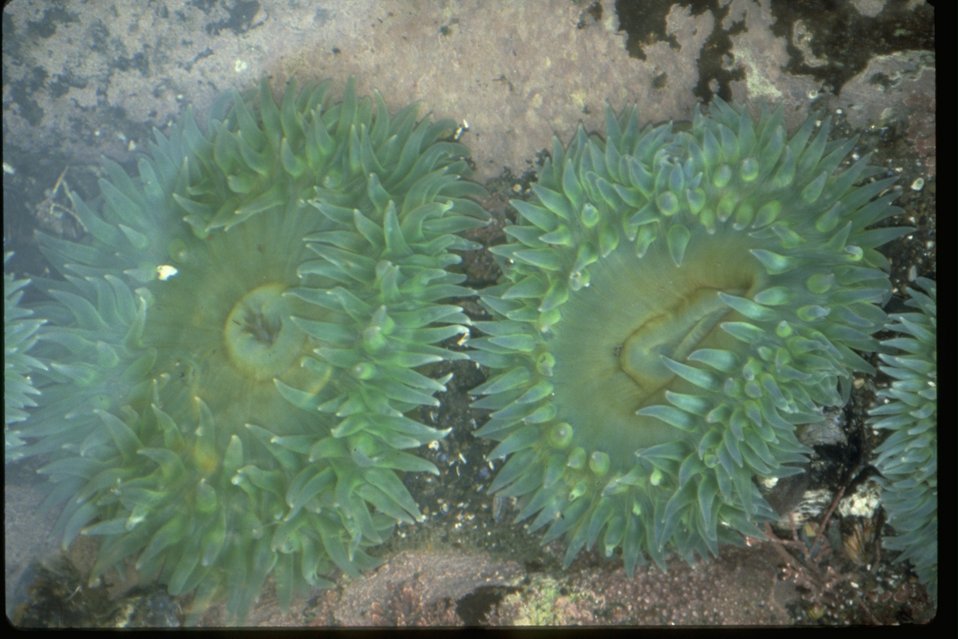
Sea Urchin in the Yaquina Head Bay Tidepools.